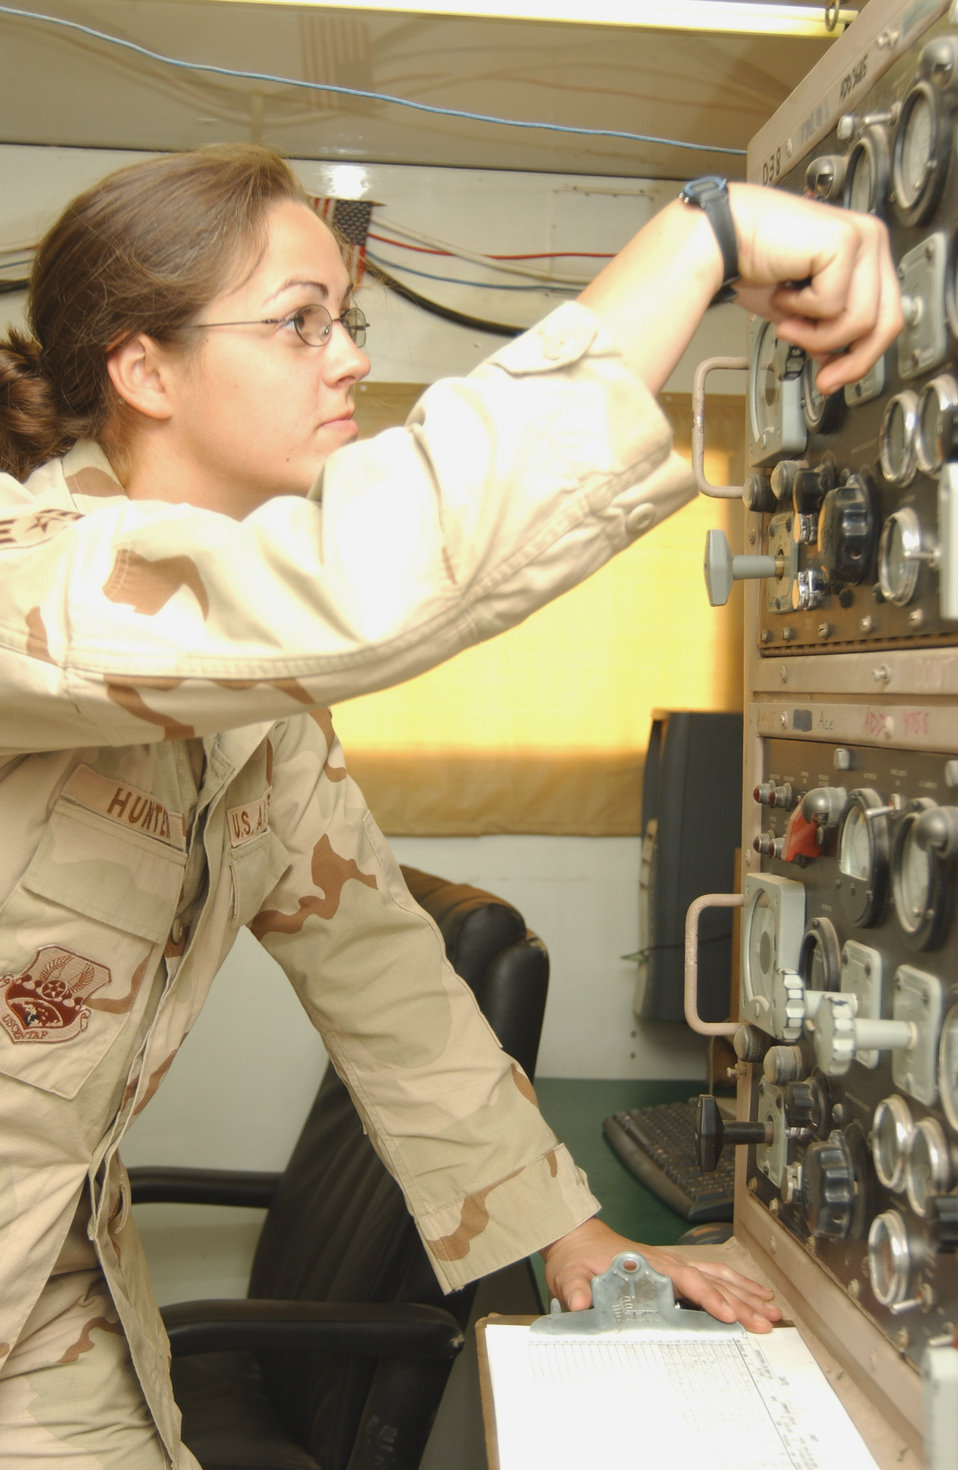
How to catch a falcon by the tail

Senior Airman Lorraine Hunter checks the electrical systems used by the mobile aircraft arresting system July 26 at Balad Air Base, Iraq. She is assigned to the 332nd Air Expeditionary Civil Engineer Squadron.